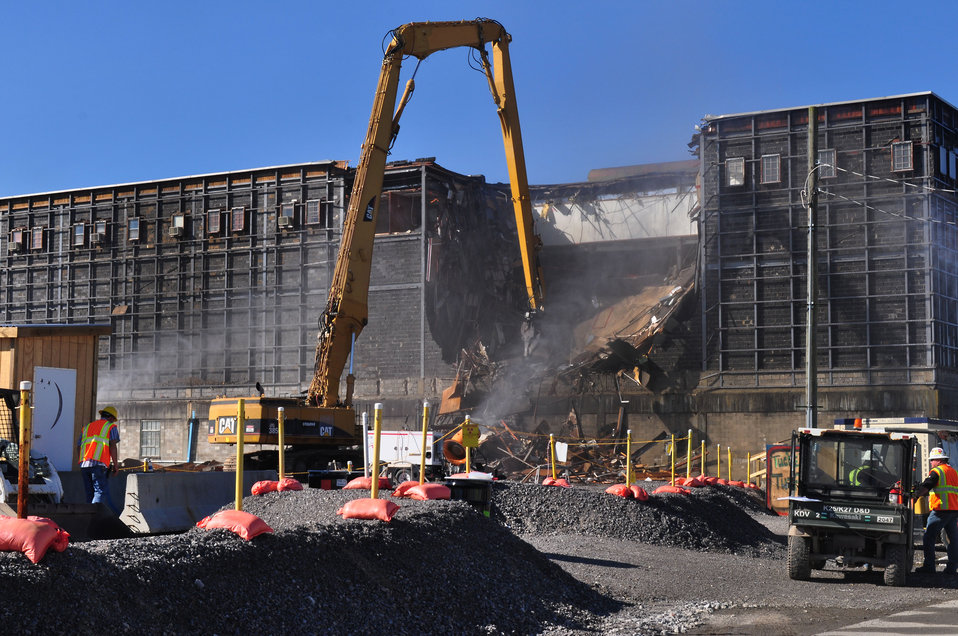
K-25 Beginning of North Tower Demolition

12-160-403 DOE photo Lynn Freeny 10-24-2012 Oak Ridge Tennessee